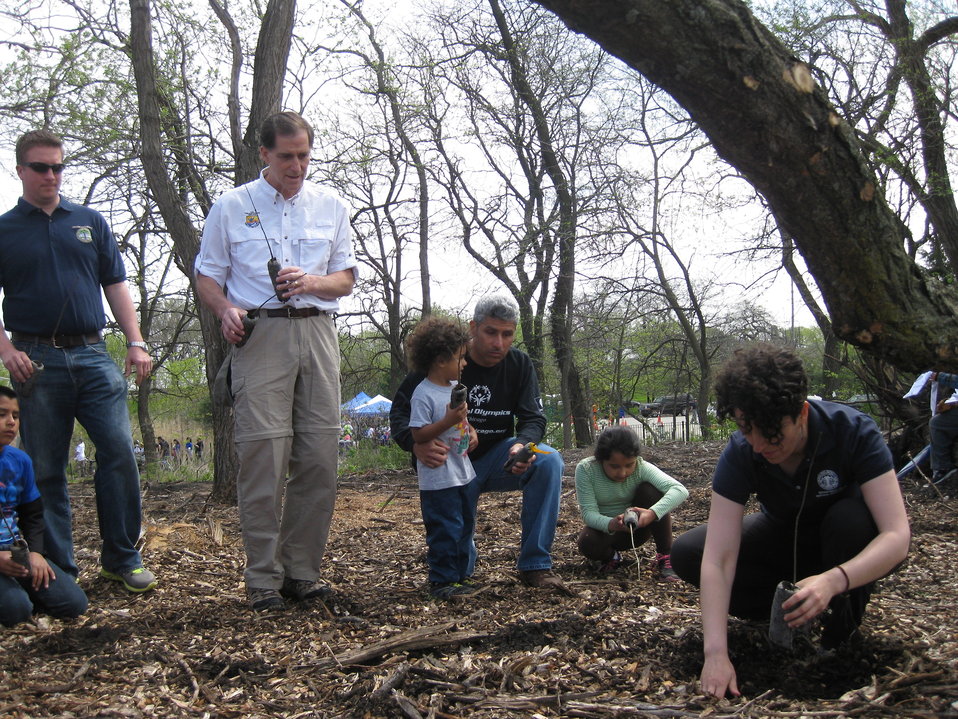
Tree Planting Instruction Starts

Chicago Park District May 10 Burnham Corridor Community Planting Day
USFWS Director Dan Ashe with other partners.
Photo by USFWS; Louise Clemency